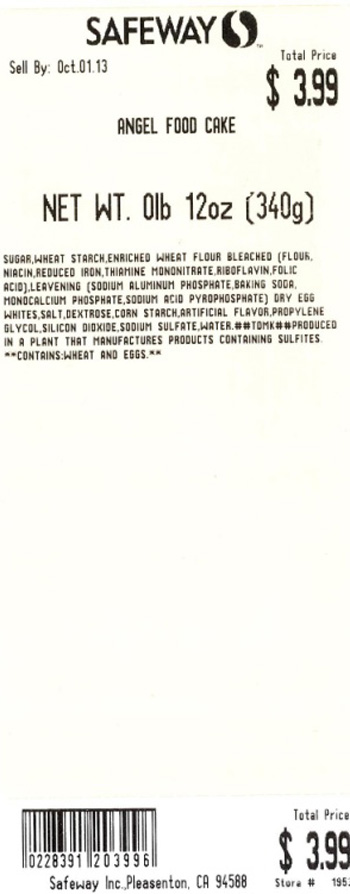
RECALLED – Angel Food Cakes

September 26, 2013 – Product Recall – Safeway Recalls Several Varieties of Angel Food Cake Due to Undeclared Soy and Milk Allergens.